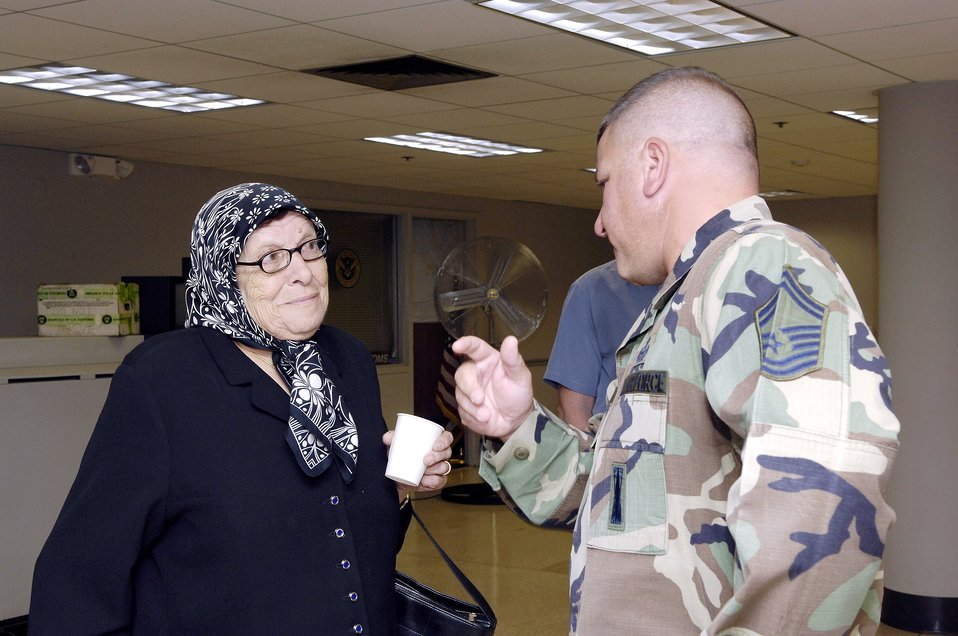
McGuire AFB provides humanitarian assistance

Senior Master Sgt. Muhammad Mustafa translates for Anisheh Bilak, an American citizen from Lebanon, that arrived on Monday, July 24, at McGuire Air Force Base, N.J. McGuire is providing humanitarian assistance for American citizens who are leaving Lebanon to return home after more than a week of fighting between the Israeli military and the militant group Hezbollah. More than an expected 1,000 Americans began arriving at McGuire on July 23. Sergeant Mustafa is assigned to the 305th Civil Engineering Squadron at McGuire.